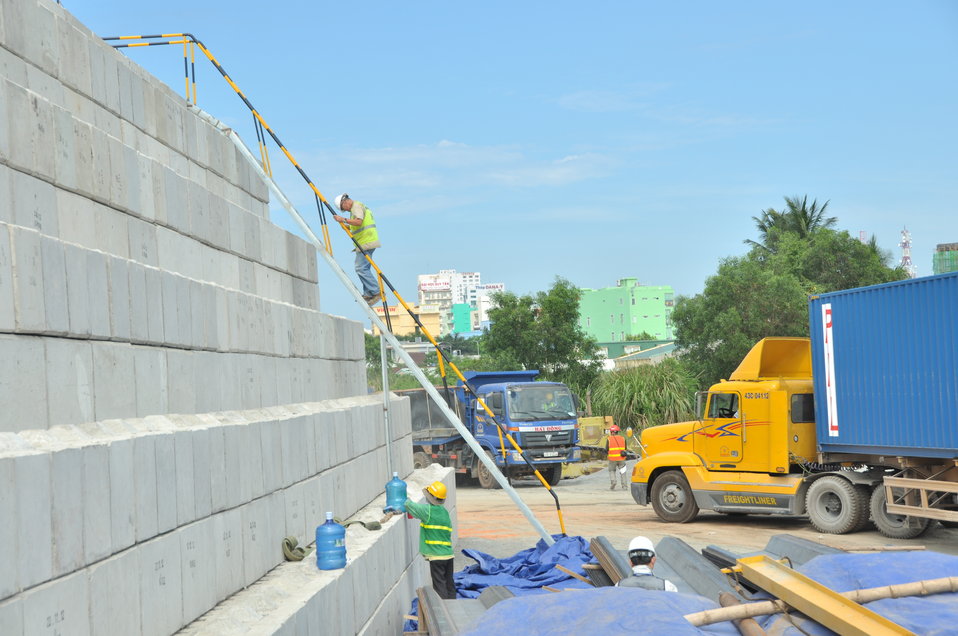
Site construction at the Environmental Remediation of Dioxin Contamination at Danang Airport

Progress at the Danang Airport remediation site
April 23, 2013